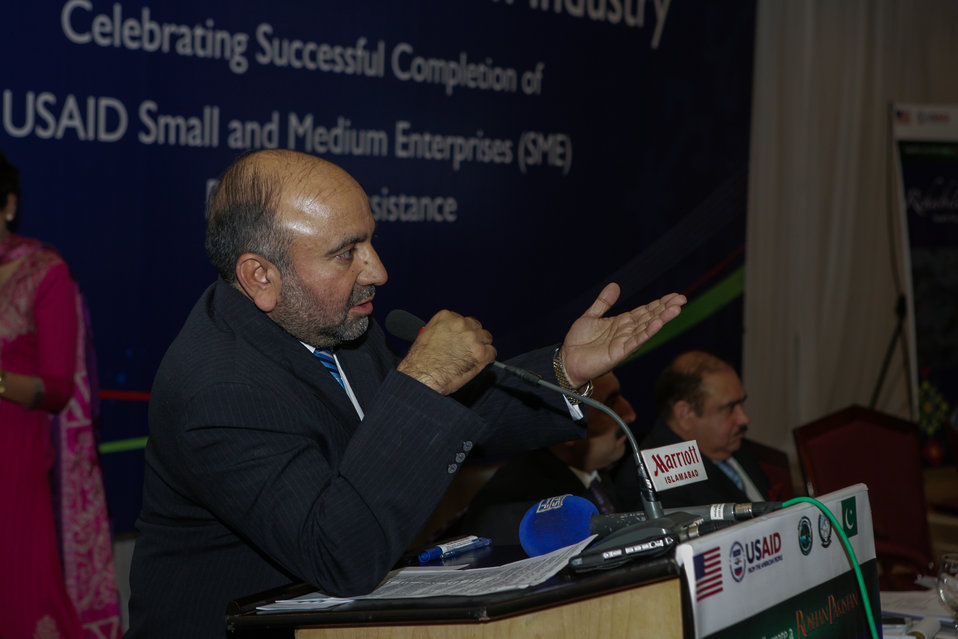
Graduation event of USAID Firms Project's Malakand Small and Medium Enterprises (SME) Recovery Assistance Program

'The timely assistance from the American people has been paramount in supporting the sustainable economic growth strategies of the Government of Khyber Pakhtunkhwa through the Provincial Reconstruction, Rehabilitation and Settlement Authority (PaRRSA),' said, Mr. Zaheer-ul-Islam, Director General, PDMA-PaRRSA